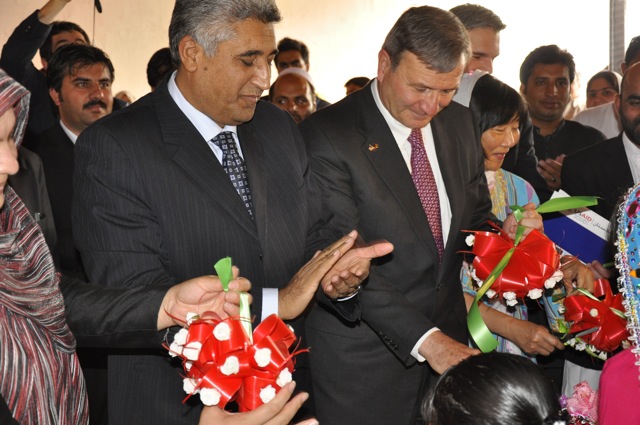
کابل کی د ښځو د کرهڼیزو خدمتنونو مرکز به اړوند موادو ته د افغان کروند ګرو ښځو لاسرسی لا زیات کړی